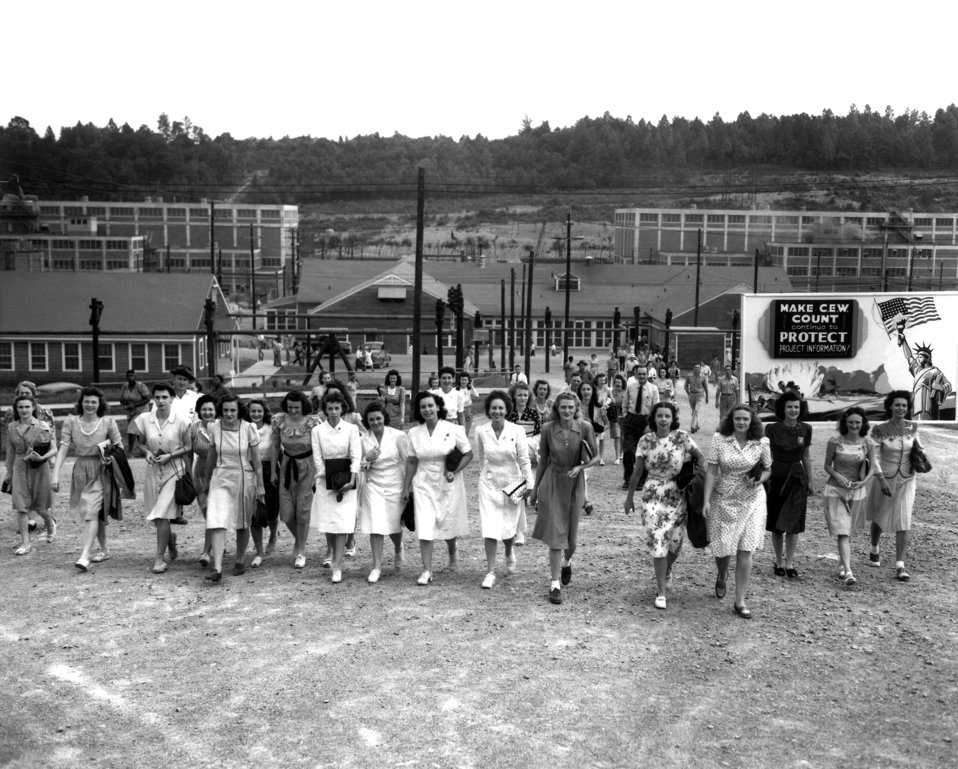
Shift change at Y-12 Oak Ridge

937-1 DOE photo by Ed Westcott Shift change at Y-12 Oak Ridge Tennessee 8-11-1945